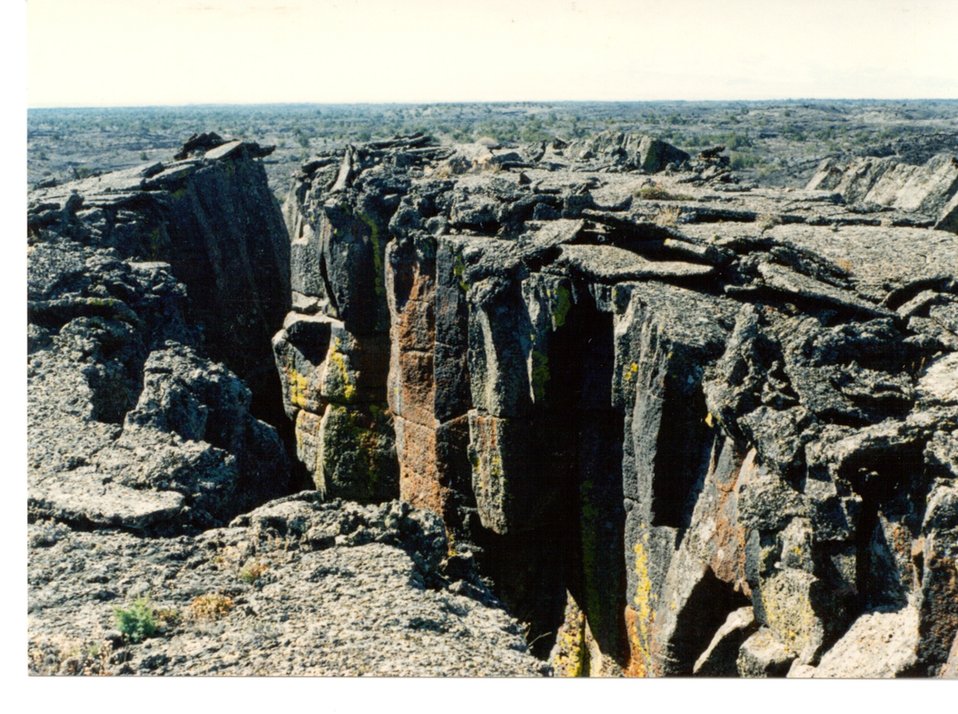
Split into Pressure Ridge Rift hike Craters of the Moon Shoshone Field Office USRD Upper Snake River District